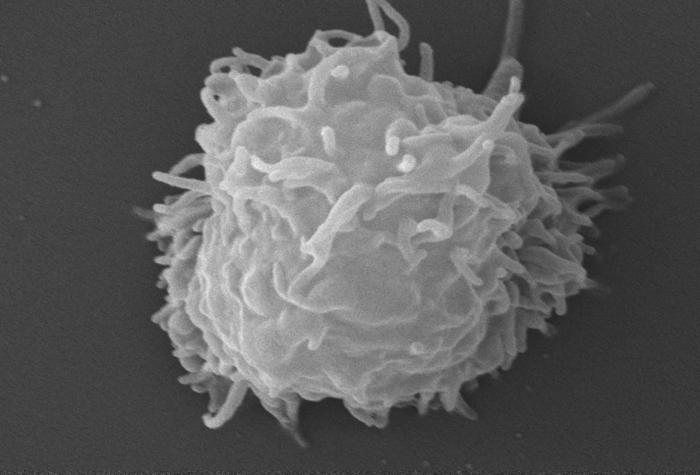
This scanning electron micrograph (SEM) revealed some of the ultrastructural features seen on the surface of an Acanthamoeba polyphaga protozoan. Note the numerous projecting pseudopodia, from the Latin pseudo = false, and podia = feet, which extend from the organism's surface. These enable the amoeba to move about, and grasp objects in its environment.